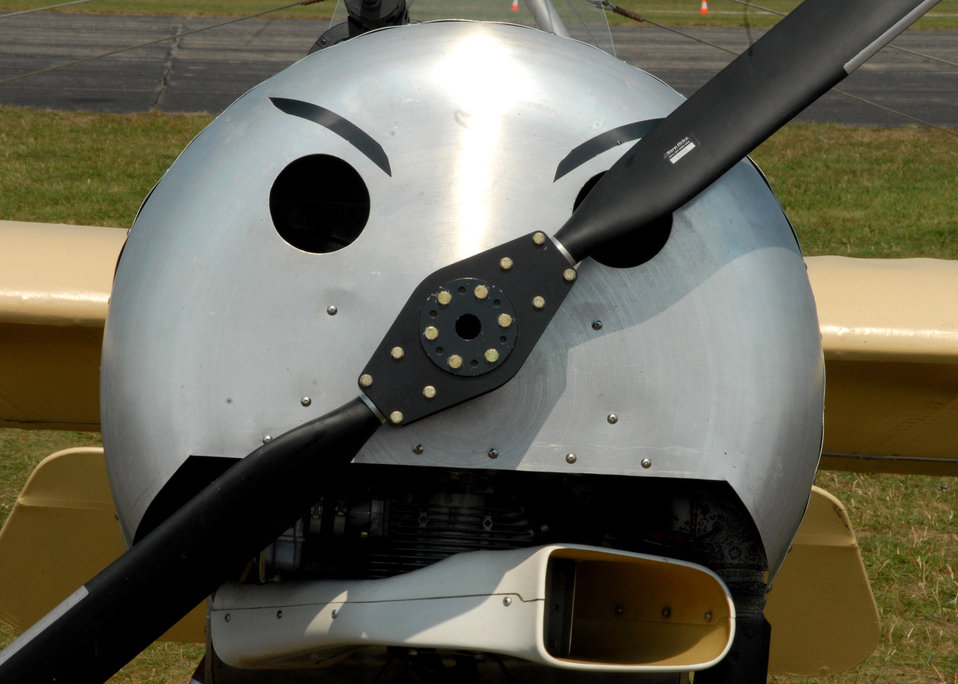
World War I fly-in

One of the many aircraft on display Sept. 22 at the Dawn Patrol Rendezvous World War I Fly-In on the grounds of the National Museum of the United States Air Force in Dayton, Ohio. Activities included period re-enactors in a war encampment setting, era automobiles on display and participating in a parade, flying exhibitions by WWI radio-controlled aircraft, and a collector's show for WWI items.